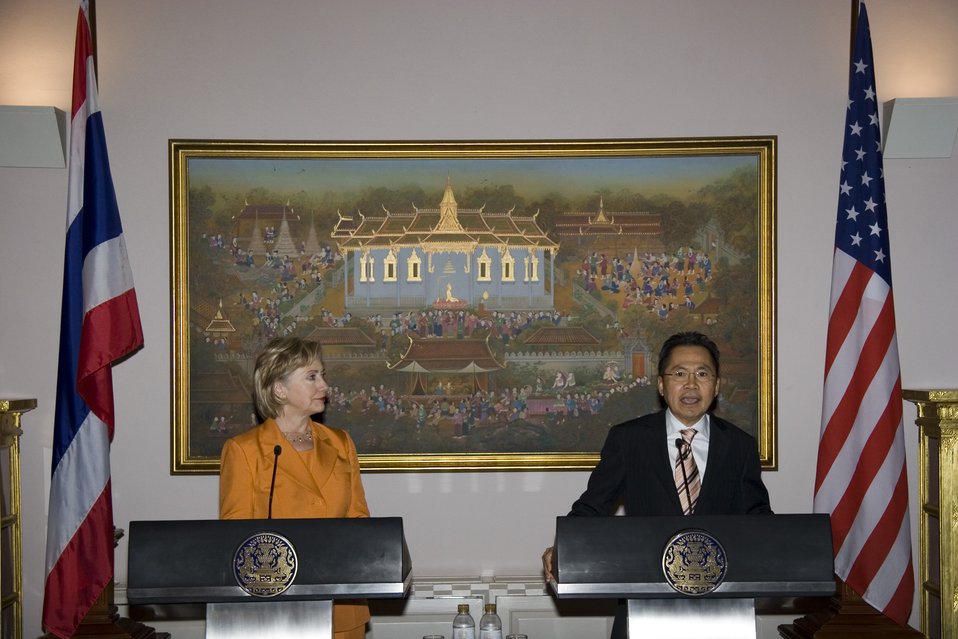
U.S.-Thailand Bilateral Meeting

U.S. Secretary of State Hillary Rodham Clinton looks on while Deputy Prime Minister Korbsak Sabhavasu gives remarks during the press conference following the bilateral meeting at Government House in Bangkok, Thailand July 21, 2009.